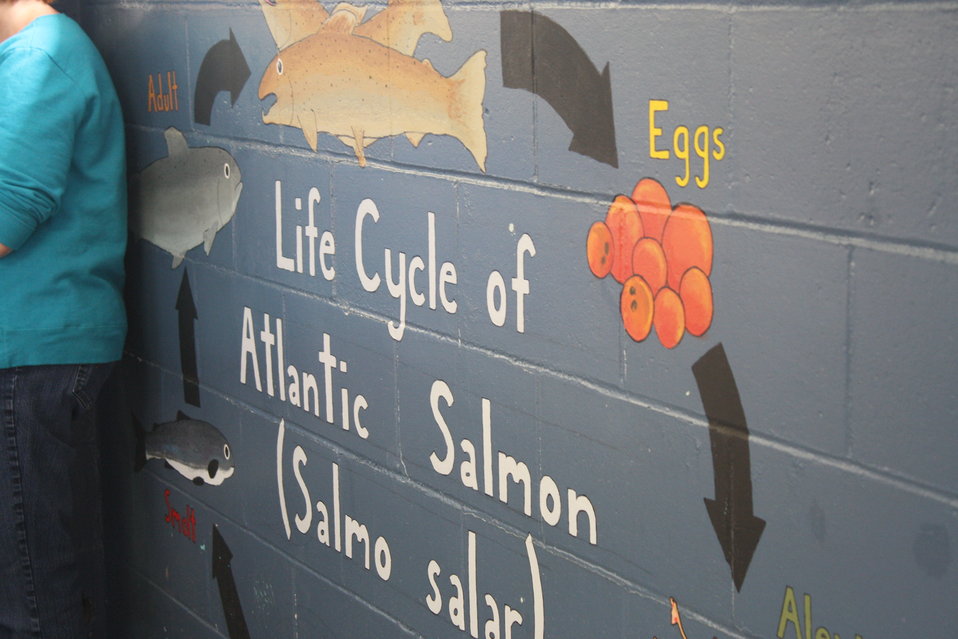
Nashua National Fish Hatchery welcomes regional office employees

Life cycle of Atlantic salmon.